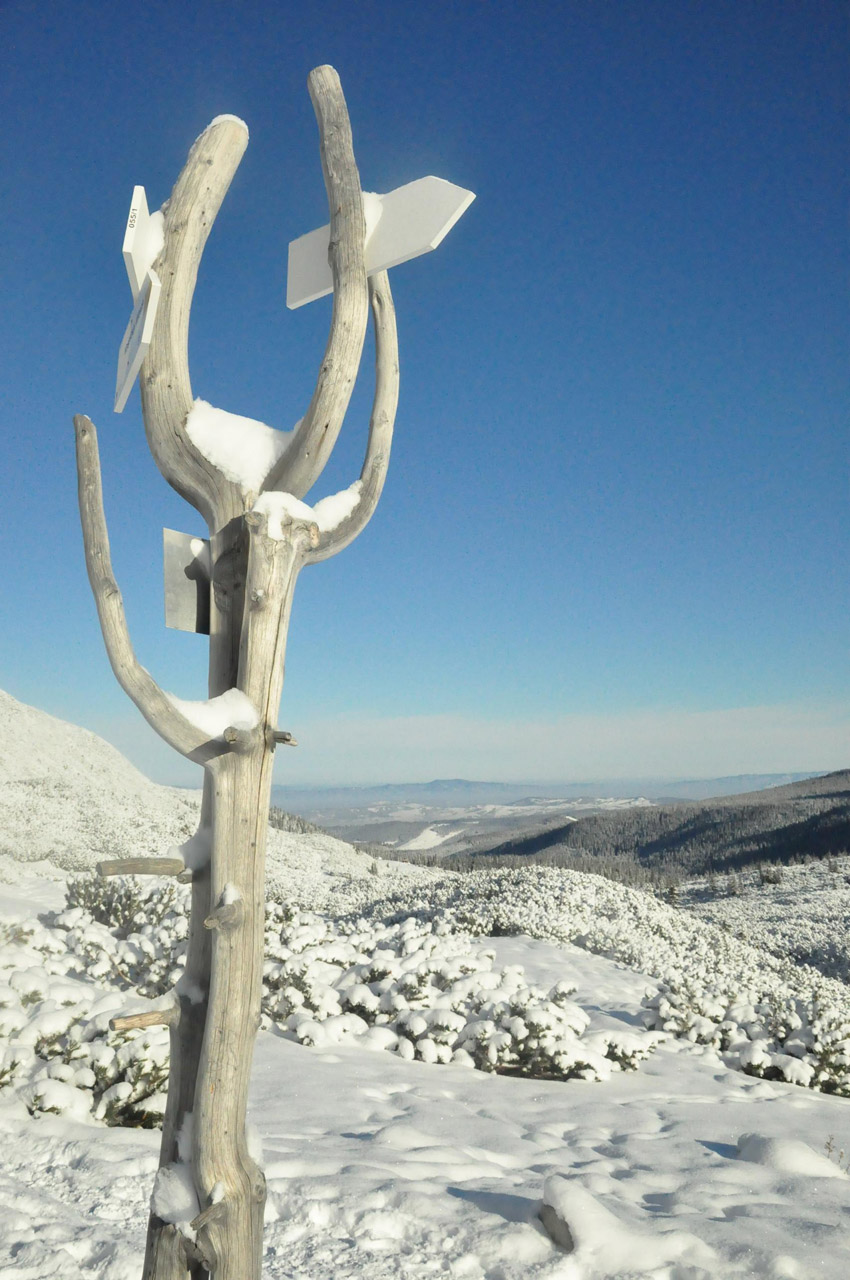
Tatras winter 2010

Winter snapshot of the tatra mountains.